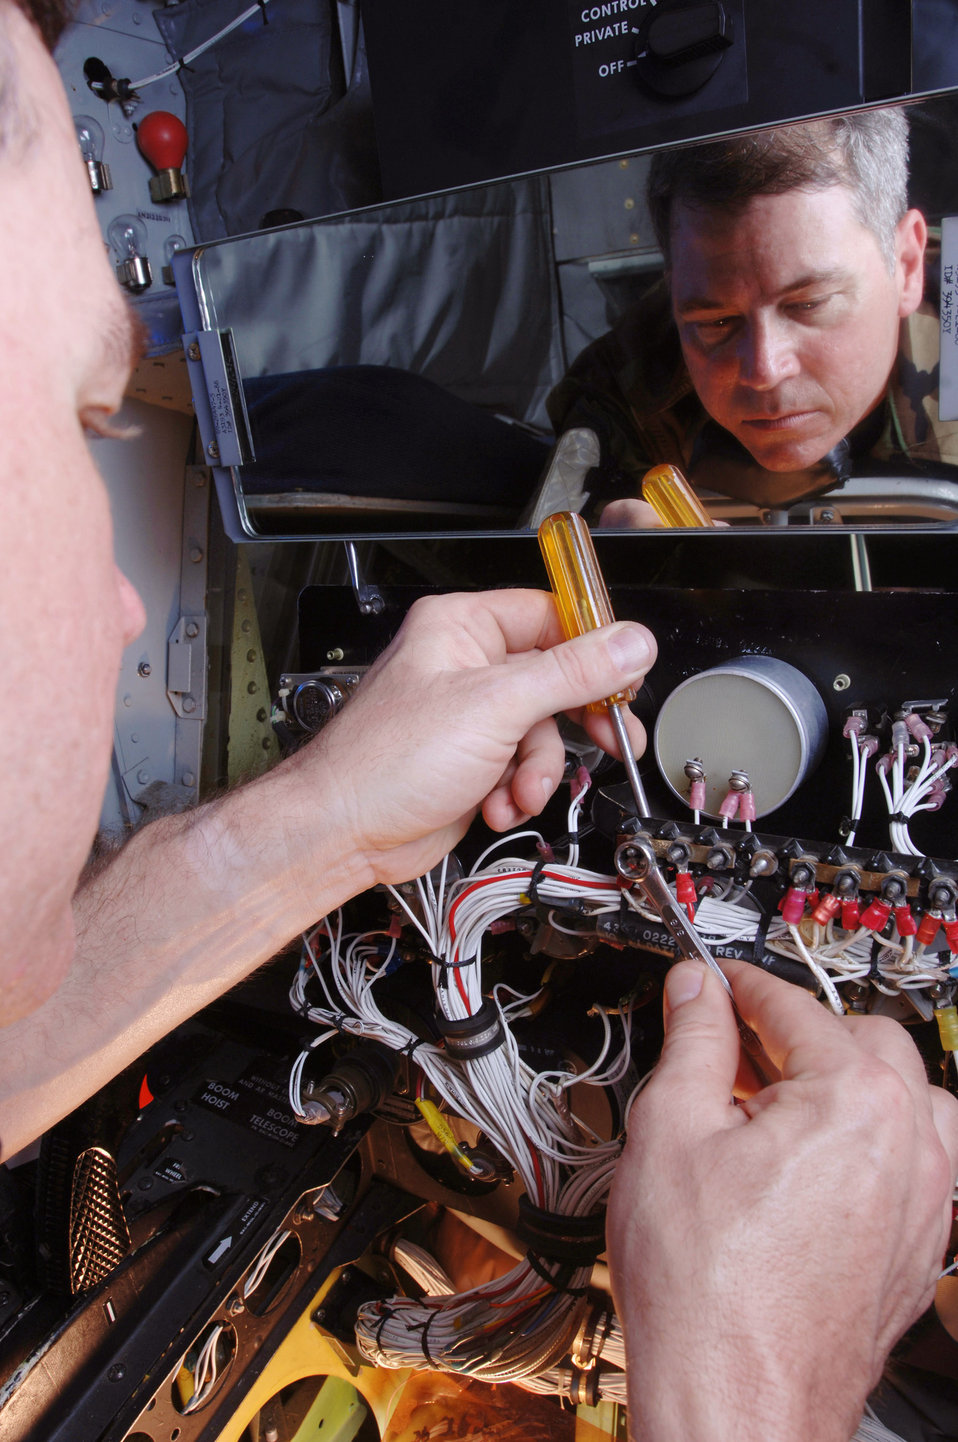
Alaska Airmen work at Guam

ANDERSEN AIR FORCE BASE, Guam -- Master Sgt. Jerry Boynton adjusts a pilot director light inside the refueling pod of a KC-135 Stratotanker during an inspection here. Sergeant Williams is with the 168th Air Refueling Wing of the Alaska Air National Guard at Eielson Air Force Base.